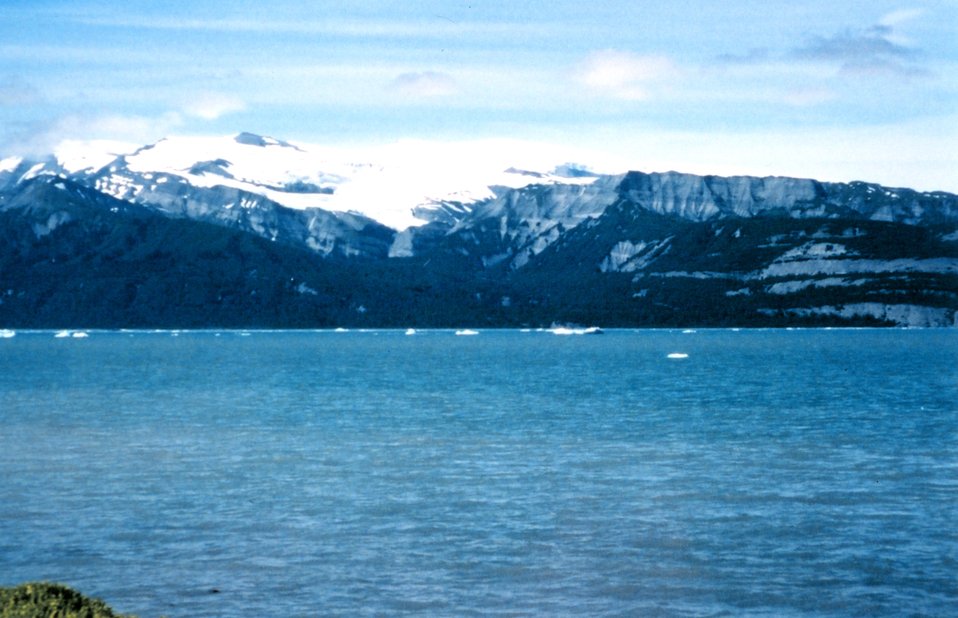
Icy Bay area. Bergs and mountains